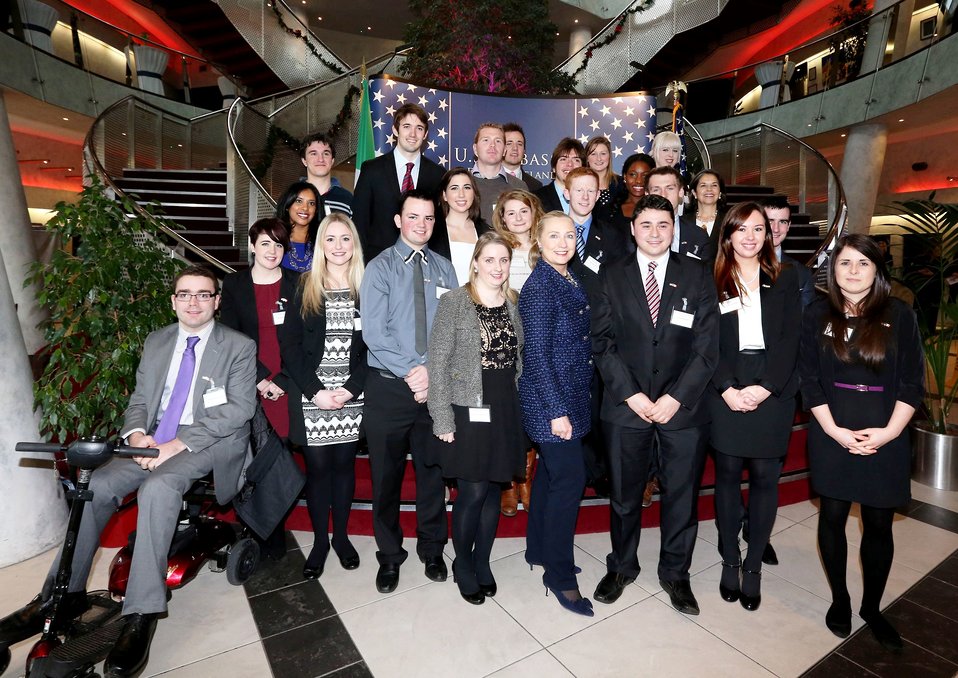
Secretary Clinton With Members of the Embassy Dublin Youth Council

U.S. Secretary of State Hillary Rodham Clinton poses for a photo with members of the Embassy Dublin Youth Council at Dublin City University in Dublin, Ireland, December 6, 2012.